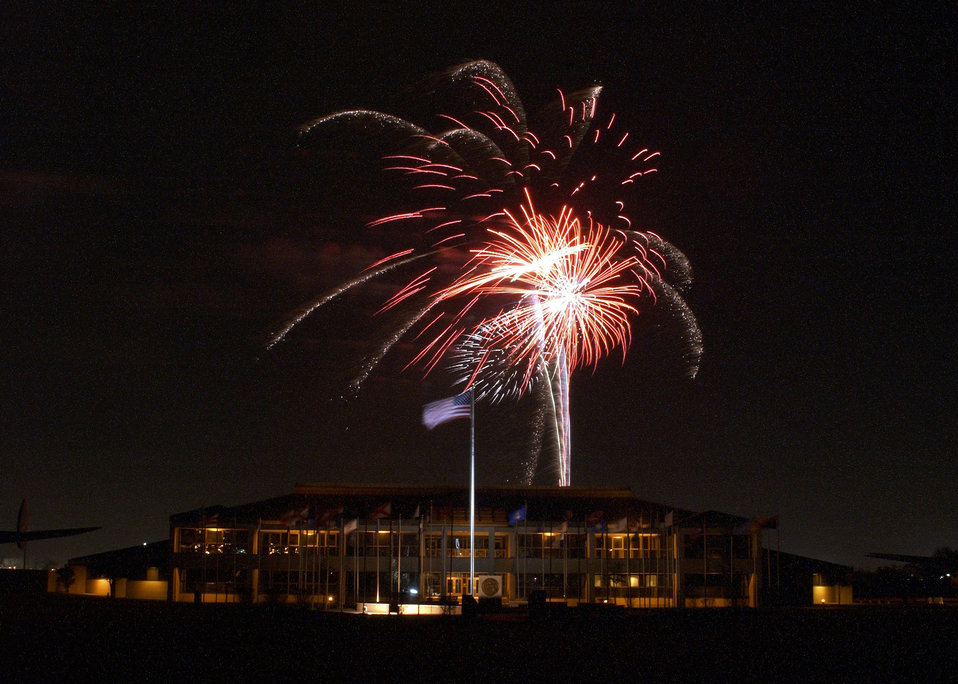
50th Anniversary

LACKLAND AIR FORCE BASE, Texas -- Fireworks explode behind the 37th Training Wing's headquarters building here during the wing's 50th anniverary celebration March 7. The celebration included music performed by the Air Force's Tops in Blue entertainment group.